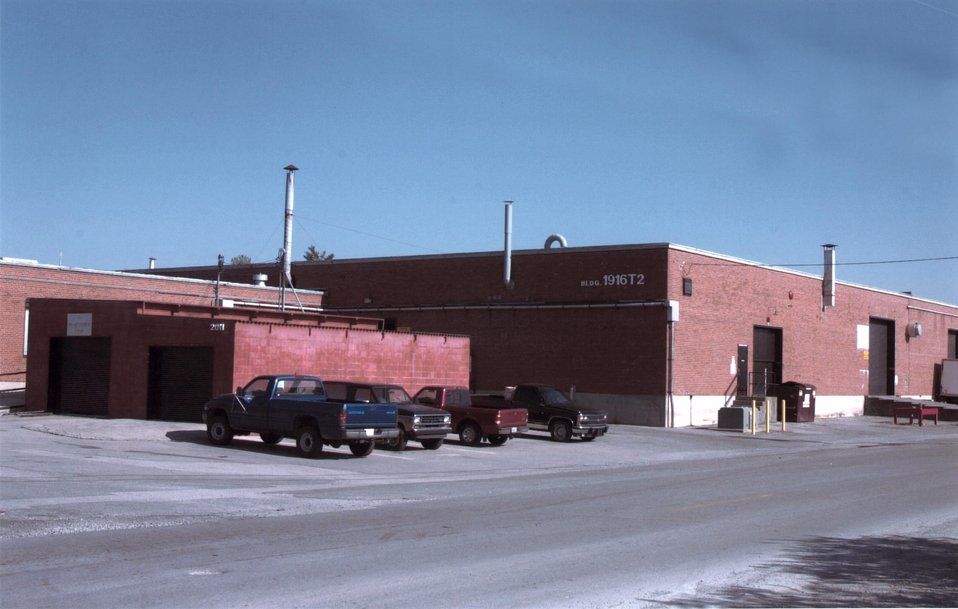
AUTOMOBILE MAINTENANCE BUILDING AT OAK RIDGE NATIONAL LABORATORY SITE.